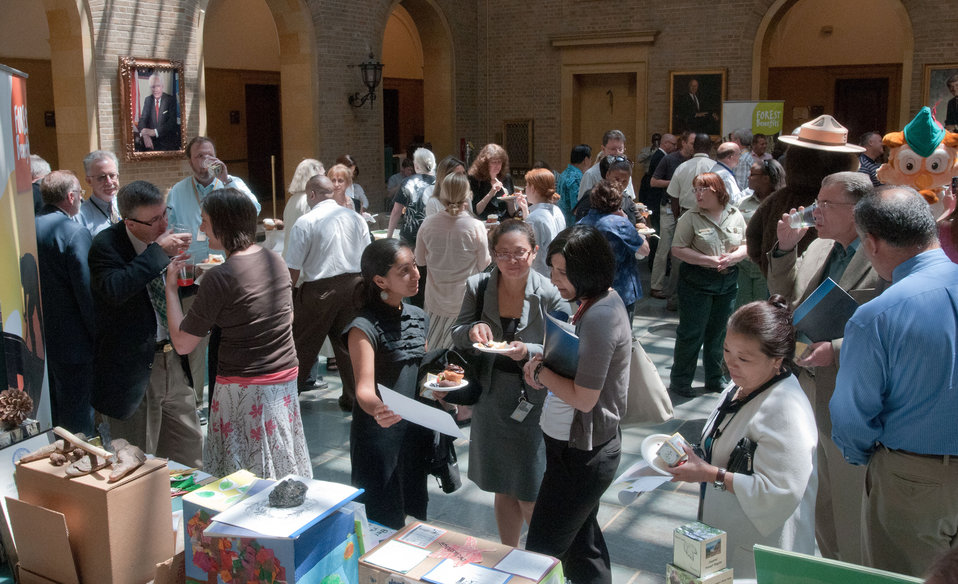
Guests at the International Year of Forests (IYOF) celebration on Friday, June 3, 2011 on the Patio of the Whitten Building, U.S.Department of Agriculture in Washington, DC.